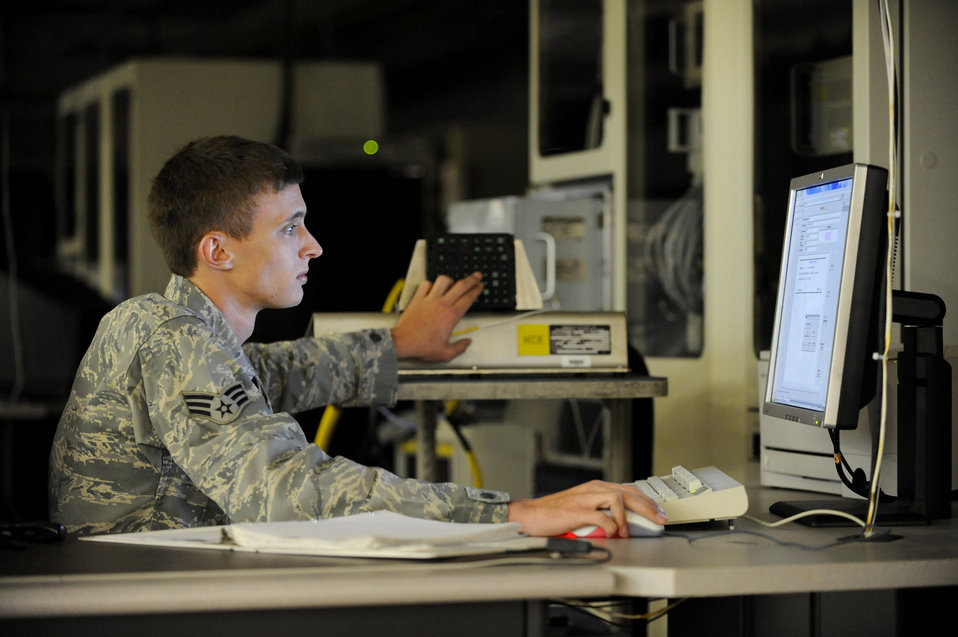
Avionics of Excellence

Senior Airman Daniel Teel tests a C-17 Globemaster III data entry keyboard May 25, 2010, at Joint Base Charleston, S.C. Airman Teel is a test station and components journeyman with the 437th Maintenance Squadron.